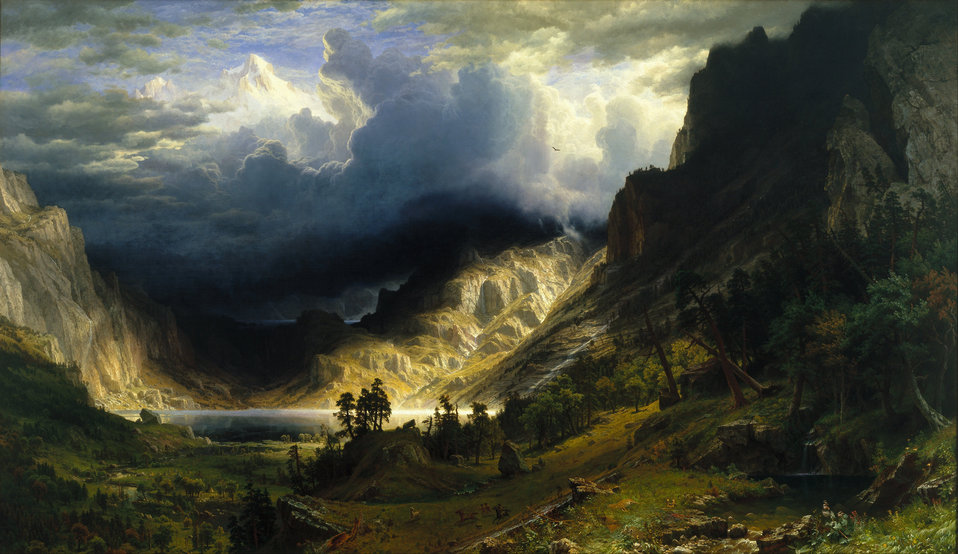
Albert Bierstadt - A Storm in the Rocky Mountains, Mt. Rosalie - Google Art Project